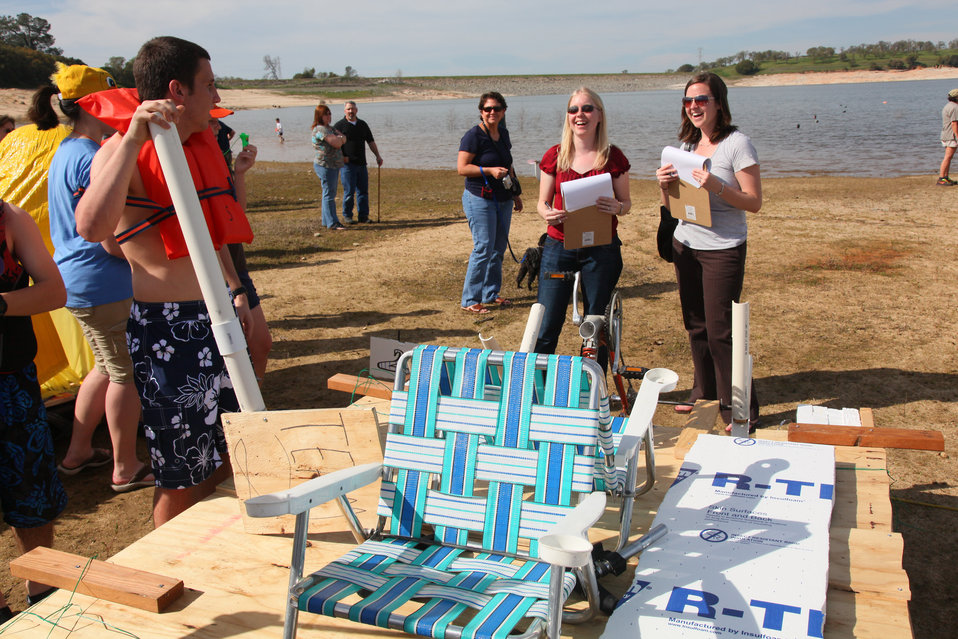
Judging Folsom High School's Cardboard/Plywood/Whatever Regatta

Folsom,Calif. (April 4, 2011) -- U.S. Army Corps of Engineers Sacramento District engineers Christy Jones (left) and Kristy Riley (right) helped judge Folsom High School’s Fourth Annual Cardboard/Plywood/Whatever Regatta at Beal’s Point State Park here April 1. Students from more than 20 physics and engineering classes at Folsom and Rancho Cordova High Schools competed to design and build boats, which were judged against design and performance criteria.